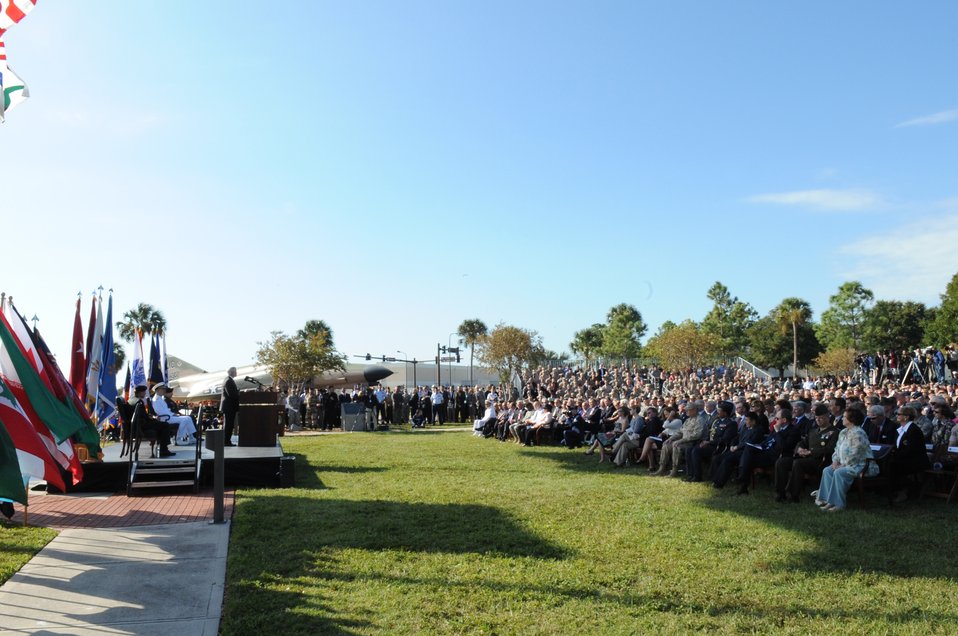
USCENTCOM Change of Command

Secretary of Defense Robert M. Gates addresses the crowd during the U.S. Central Command change of command ceremony Oct. 31 at MacDill Air Force Base, Fla. During the ceremony, Army Gen. David H. Petraeus assumed command of U.S. Central Command from acting commander Army Lt. Gen. Martin E. Dempsey.